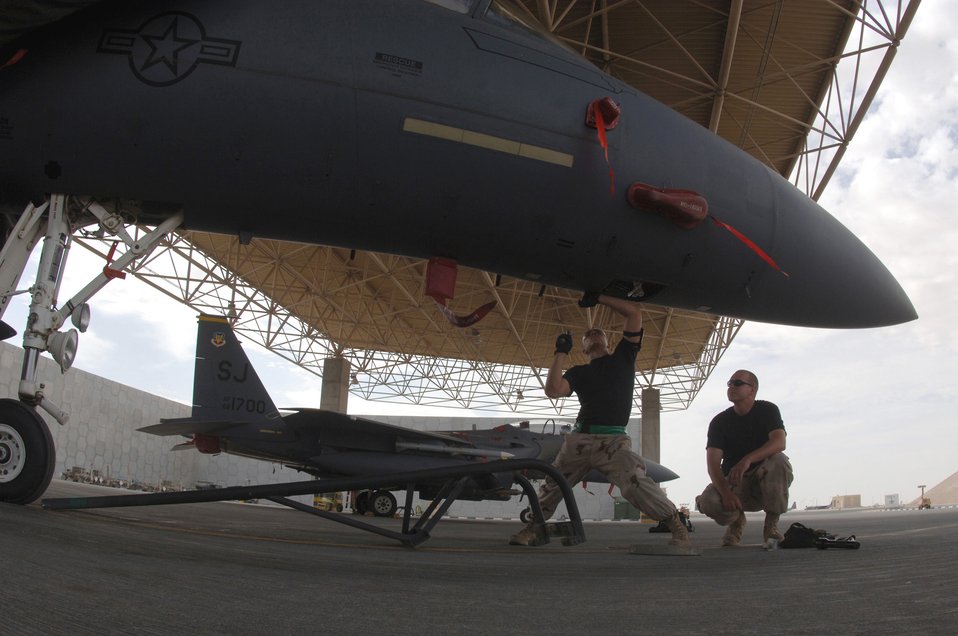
Deployed F-15s

Airmen with the 379th Expeditionary Maintenance Squadron work on an F-15E Strike Eagle at a forward-deployed location in Southwest Asia, on Wednesday, April 5, 2006. The F-15E is a dual-role fighter designed to perform air-to-air and air-to-ground missions. It is deployed from Seymour Johnson Air Force Base, N.C.